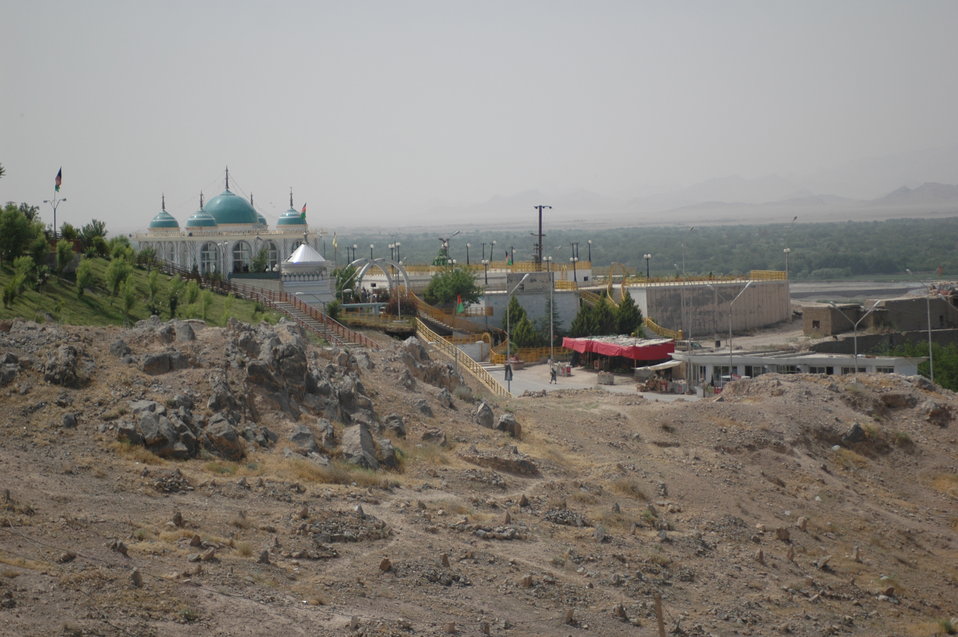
Dr Shah Visits Kandahar April 9, 2010